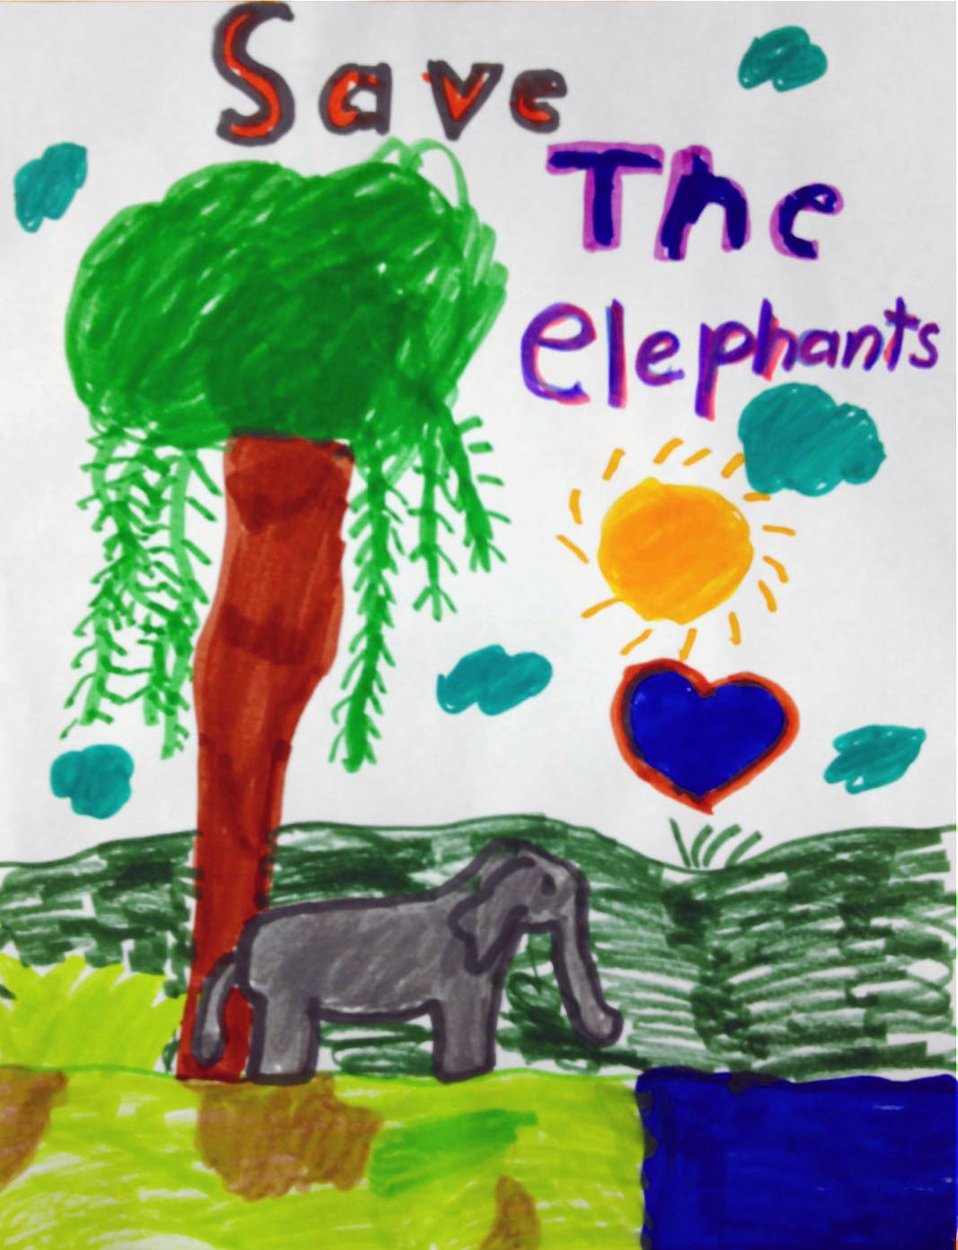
Drawing by Rowan